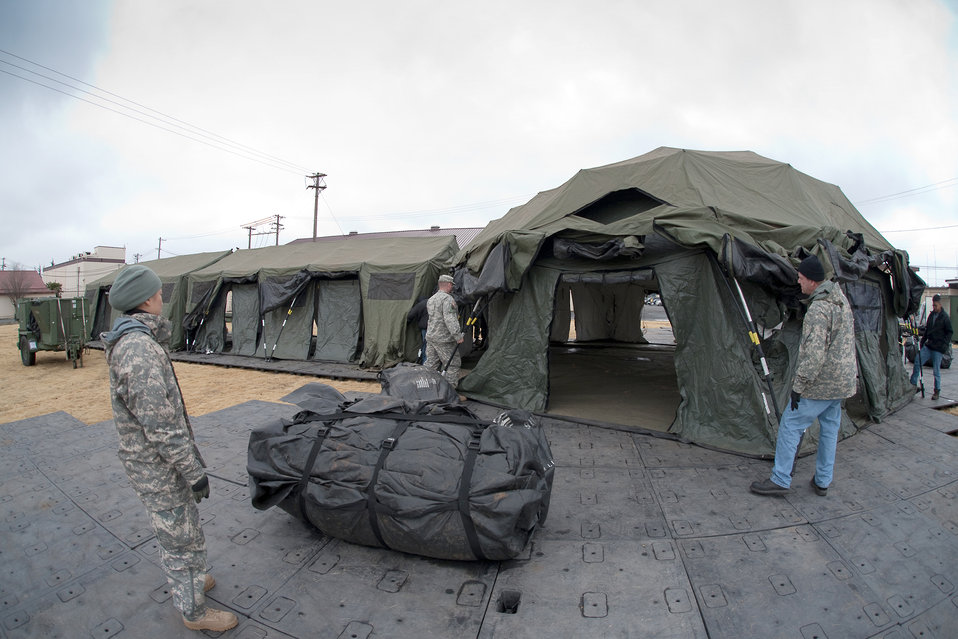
Yokota AB temporarily grows to accommodate Operation Tomodachi support

Pacific Command personnel build tents March 22, 2011, at Yokota Air Base, Japan. The tents will provide additional workspace for personnel deploying to Yokota AB in support of Operation Tomodachi.